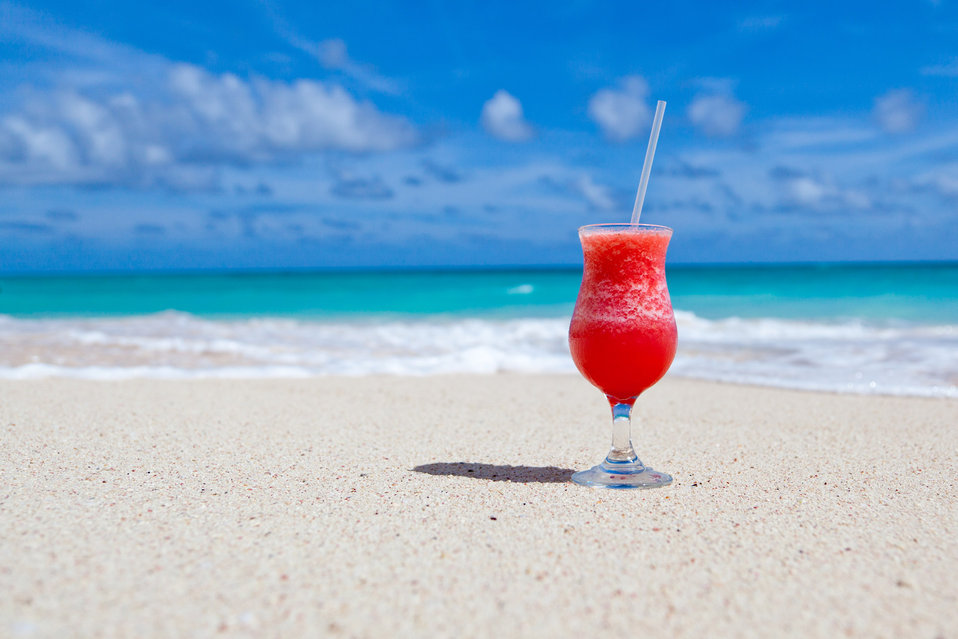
Drink on beach

A red drink with a straw on the white beach with ocean and sky in the background.